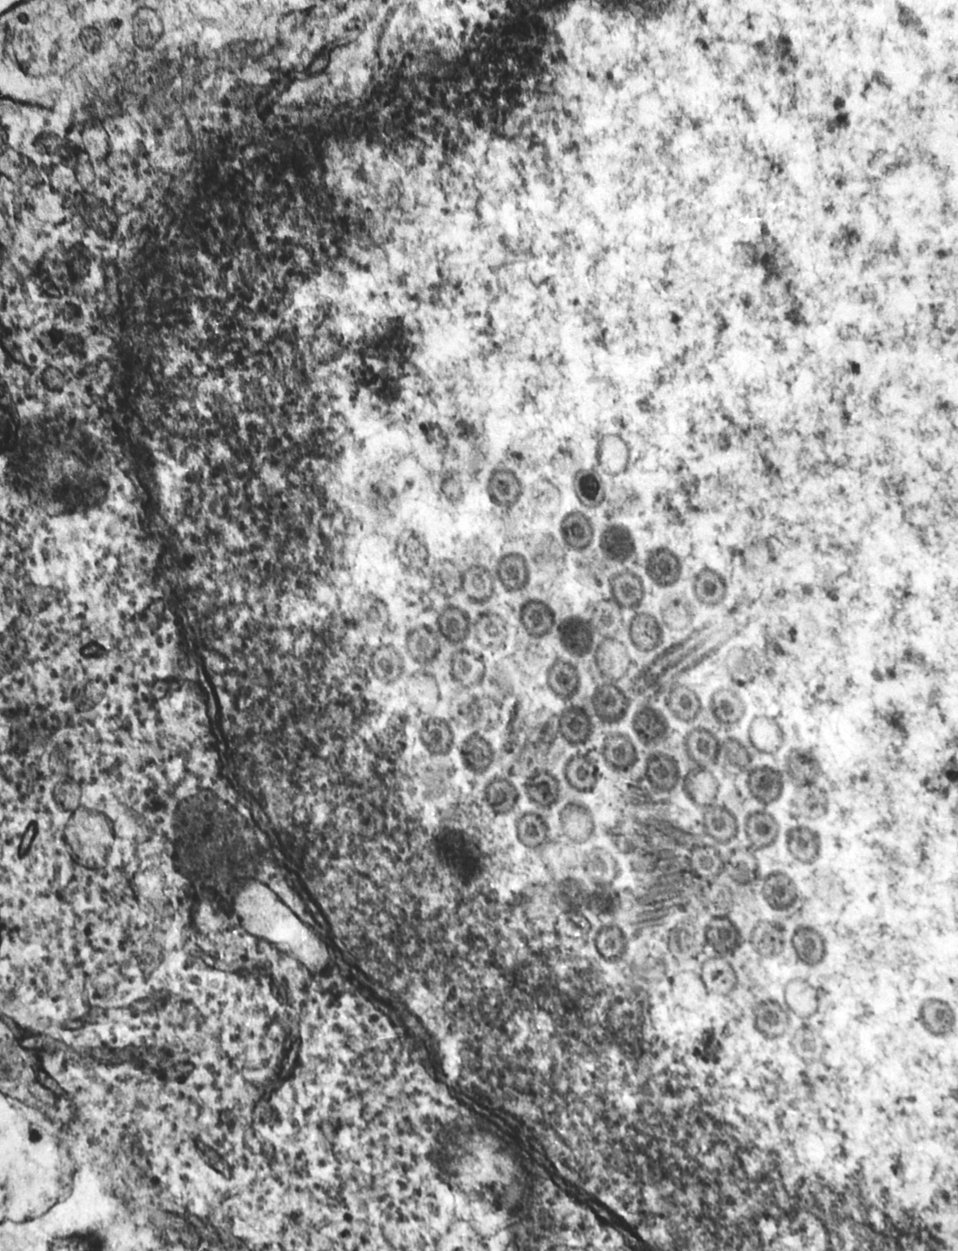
This negatively-stained transmission electron micrograph (TEM) revealed the presence of numerous herpes simplex type-2 virions, members of the Herpesviridae virus family. There are two strains of the herpes simplex virus, HSV-1, which is responsible for cold sores, and HSV-2, which is responsible for genital herpes. At the core of its icosahedral proteinaceous capsid, the HSV contains a double-stranded DNA linear genome.